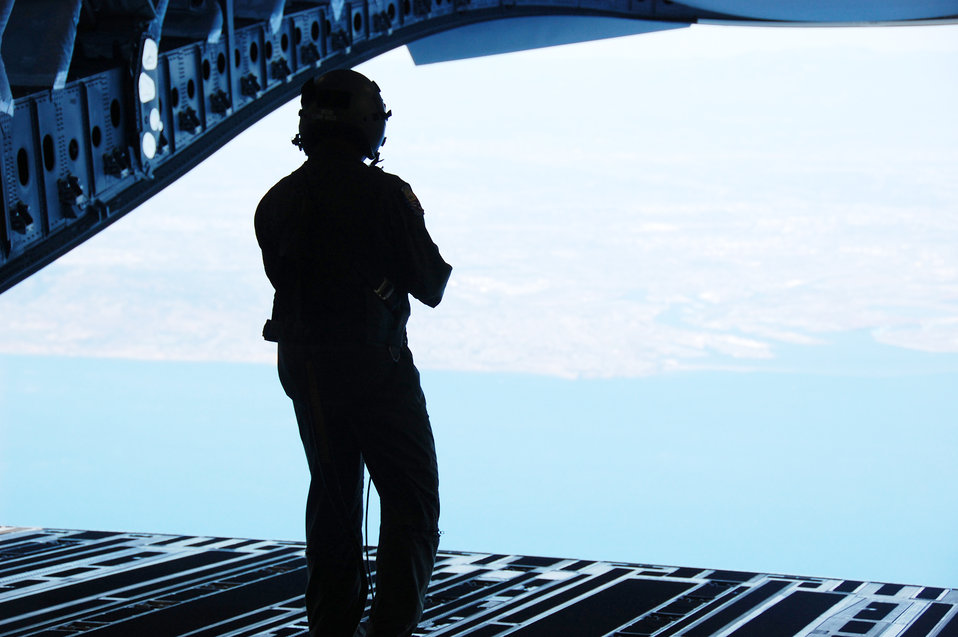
Acceptance crew ensures flight safety for Air Force

Tech. Sgt. Sidney De Leon checks the proper function of the opening of the C-17 Globemaster III cargo/door ramp in-flight while flying Oct. 15, 2009, along the coast of Long Beach, Calif. Whenever Boeing rolls a new C-17 off the plant, Sergeant De Leon and his team have to make sure it's ready for the Air Force to fly. Sergeant De Leon is a Defense Contract Management Agency C-17 acceptance crew member.